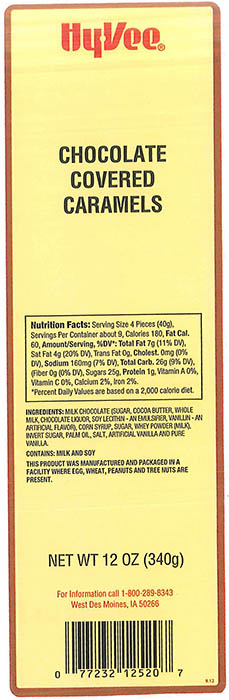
RECALLED – Chocolate Caramel Clusters and Chocolate Covered Caramels

November 11, 2013 – Product Recall – Palmer Candy Company Voluntarily Recalls HyVee Chocolate Caramel Clusters and HyVee Chocolate Covered Caramels Due to Undeclared Peanut Allergen.